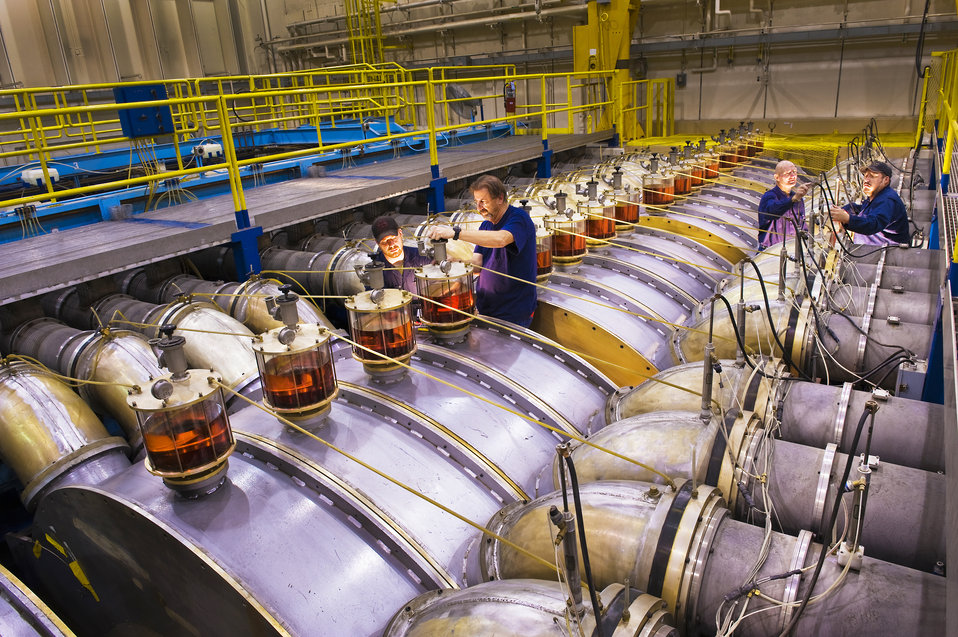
The Linear Hermes Pulsed Power Machine- the most powerful gamma ray producer in the world - is serviced for its next shot by technicians.
Hermes and Saturn are kept in 'warm standby mode' for immediate testing of components, because of Sandia's nuclear responsibilities.